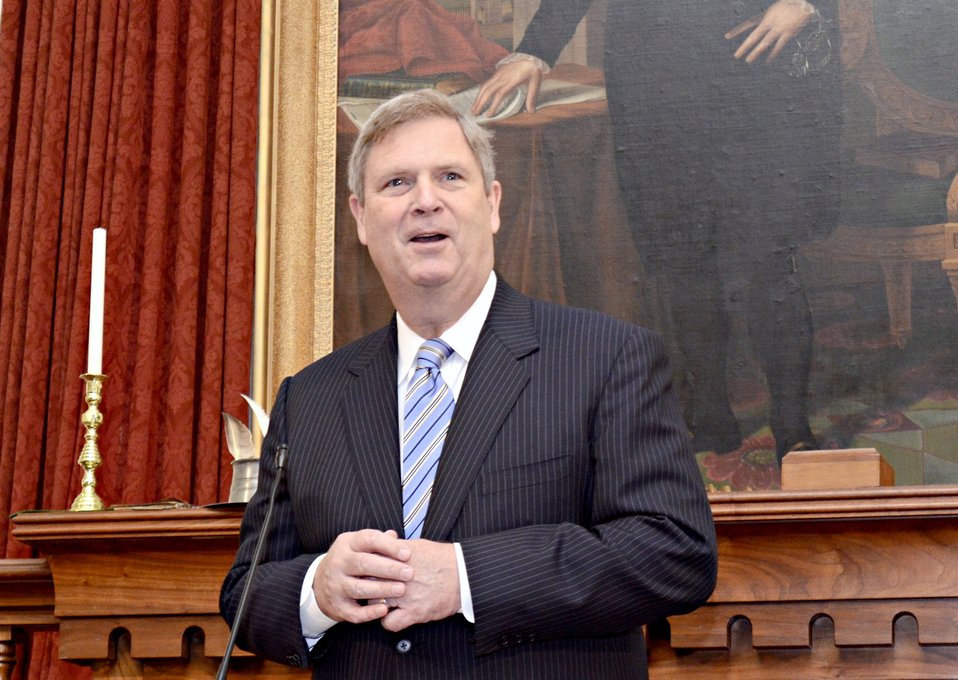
Agriculture Secretary Tom Vilsack speaking at the Old State Capitol in Springfield, IL, to commerorate the 150th Anniversary of the creation of the U.S. Department of Agriculture on Wednesday, November 2, 2011.